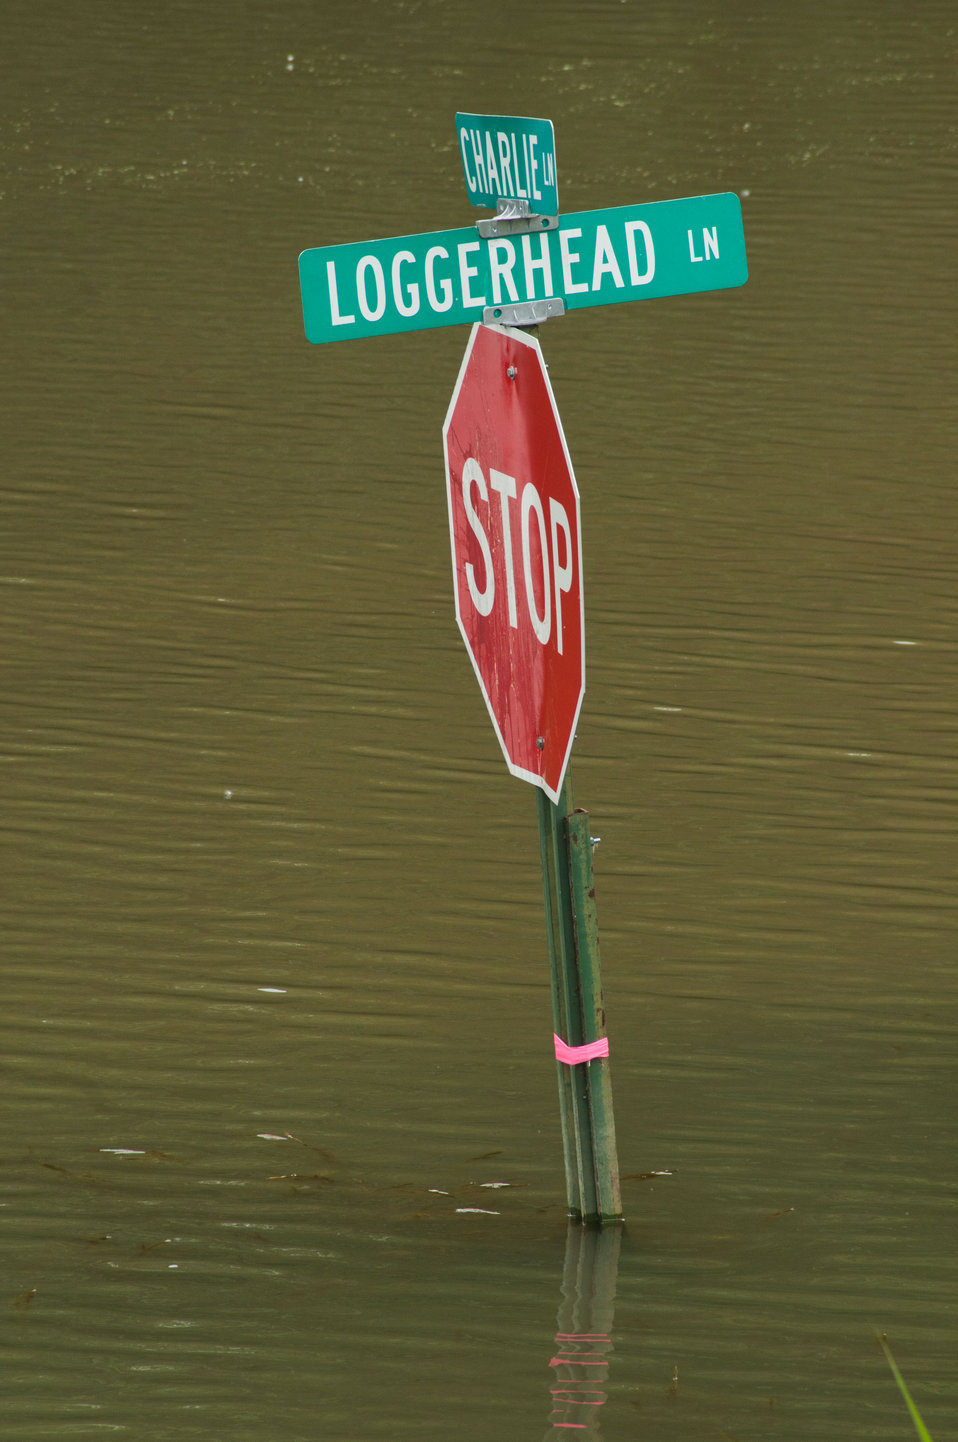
Mississippi River floods waters inundated Tunica Cutout, MS and as water receeds the roofs are being revealed on Sunday, May 15. 2011. The entire population was relocated nearby to the protected side of the levee.